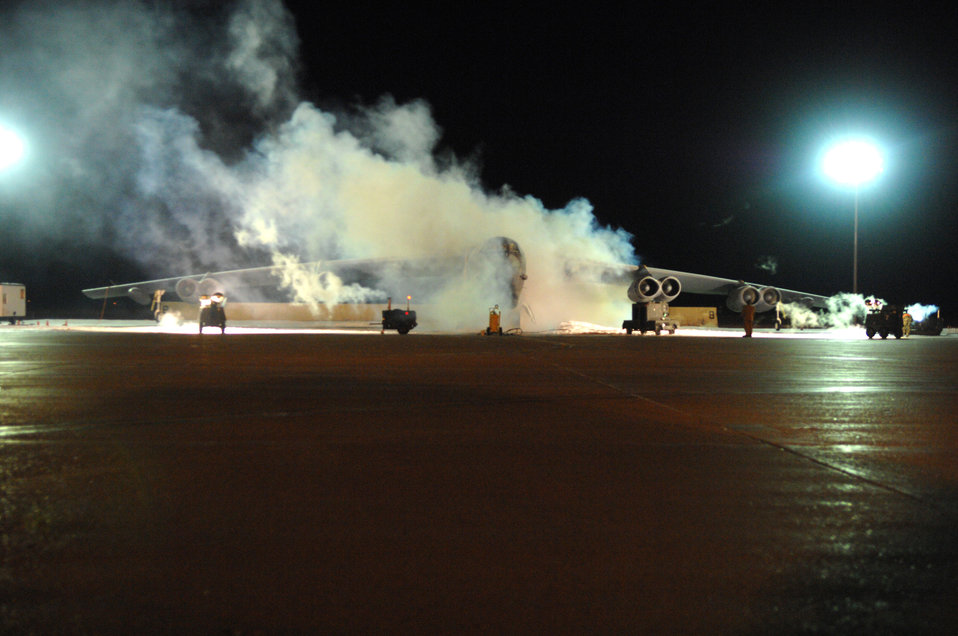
B-52 tests synthetic fuel in cold weather

A B-52 Stratofortress on the Minot Air Force Base, N.D., flightline fires up its engines before daybreak Jan. 30 during a test to measure the difference between JP-8 fuel and a new synthetic fuel. The testing of synthetic fuel in cold weather is the last step in the certification process to help reduce Air Force dependence on imported fuel. With added wind chill, Minot experienced temperatures of minus 25 degrees on this day.